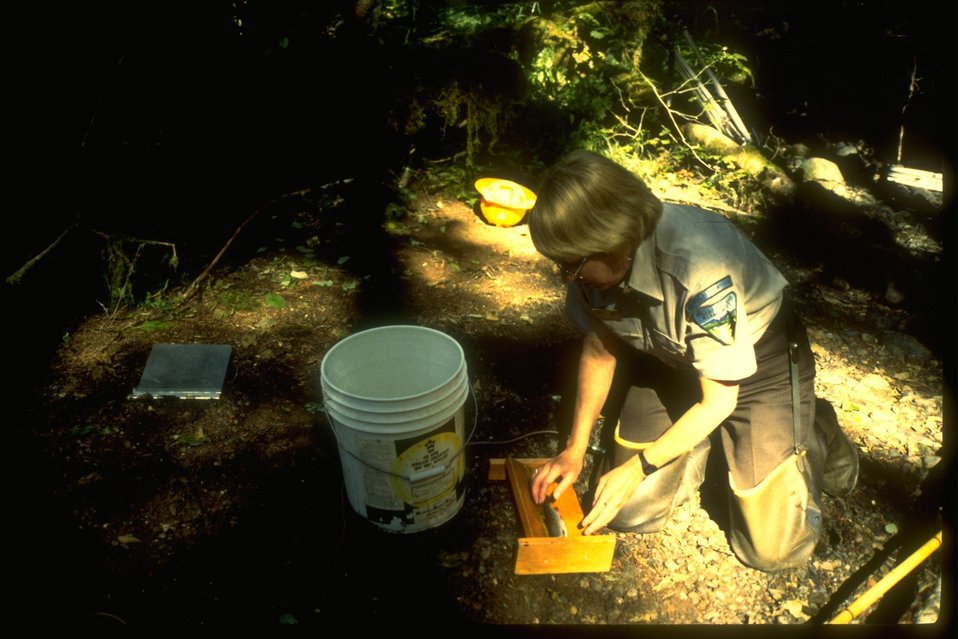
Fish biologist measures fish and writes down specific biological characteristics about the fish.